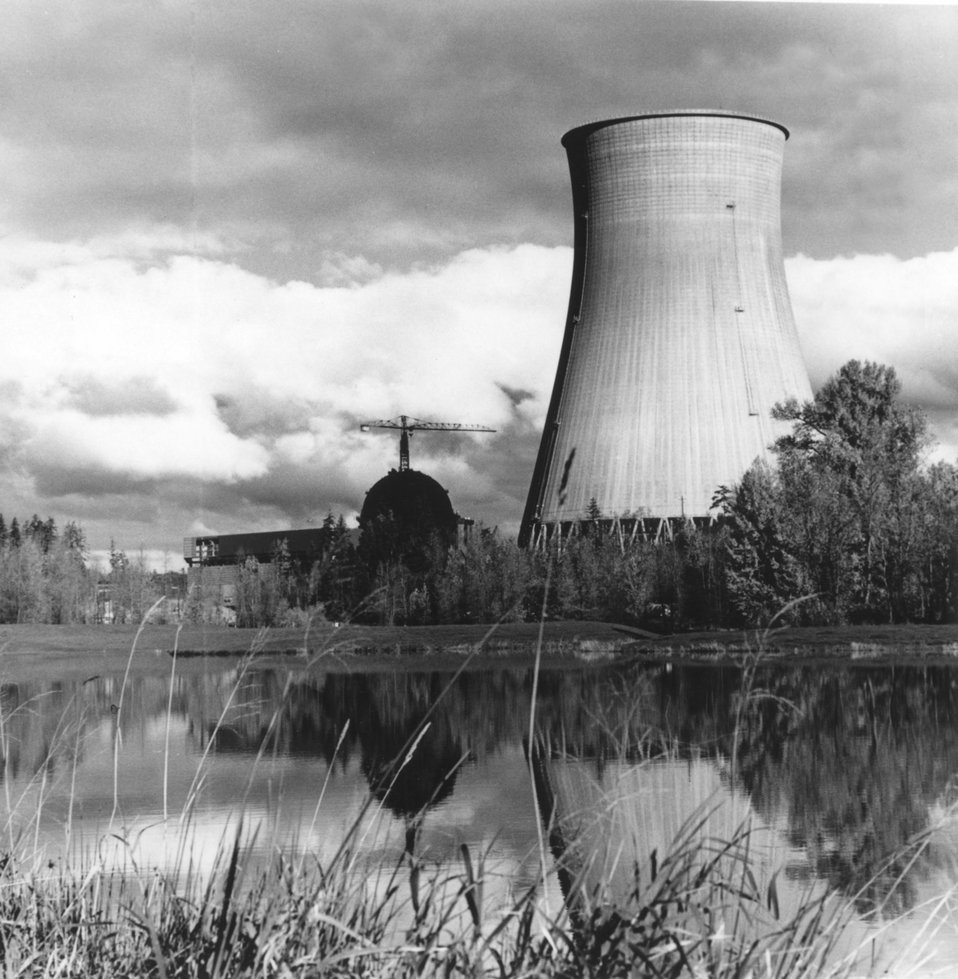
Back view of the Portland General Electric Co.'s Trojan Plant, under construction on the Columbia River, with the 499-ft. high cooling tower shown to the right. Circa 1974.